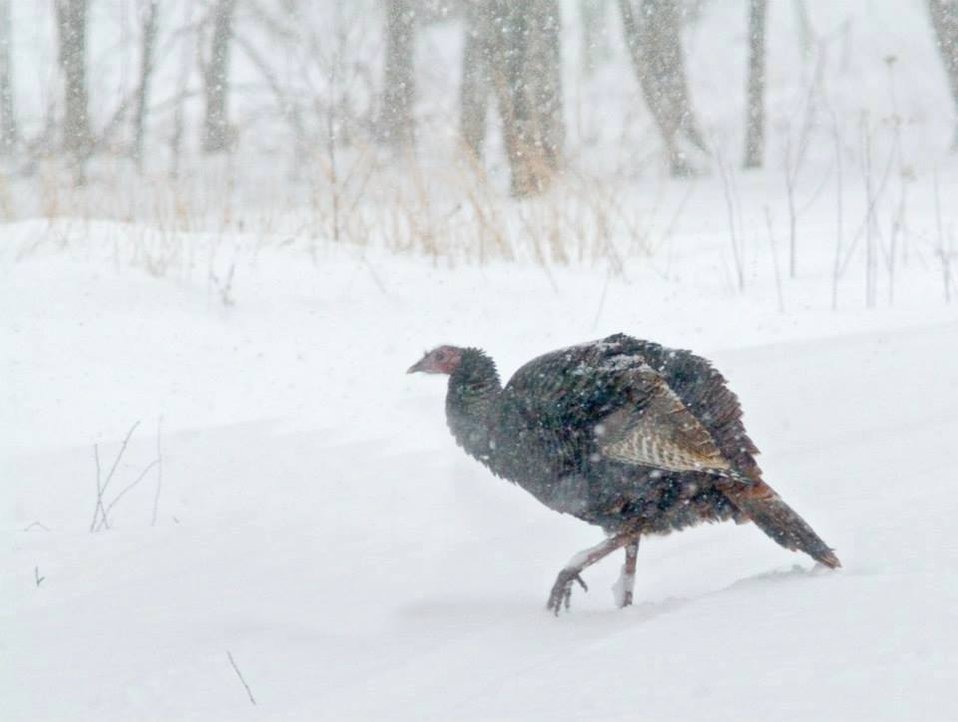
Wild turkey in snow

Canaan Valley National Wildlife Refuge.